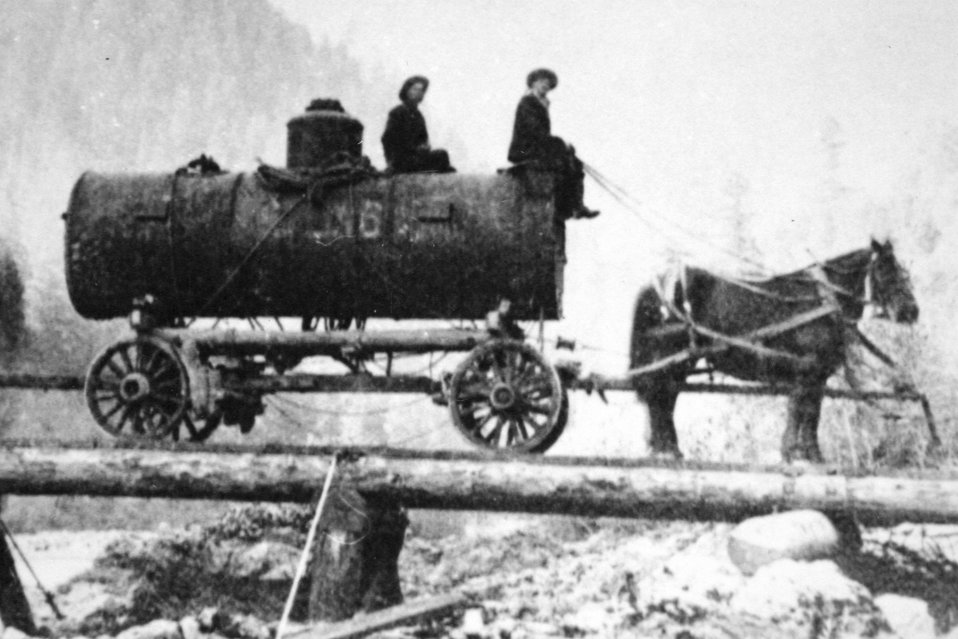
Almeda mine C. 1910 - 1911